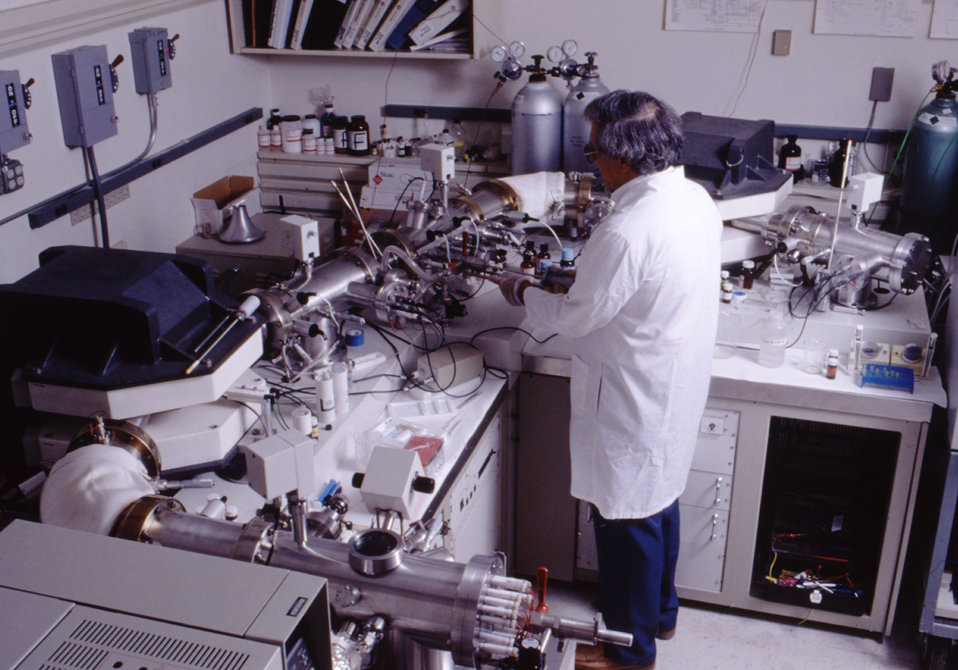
This 1980s image shows Vince Demaggio, Div. of Laboratory Sciences, National Center for Environmental Health, working with a mass spectrometer.